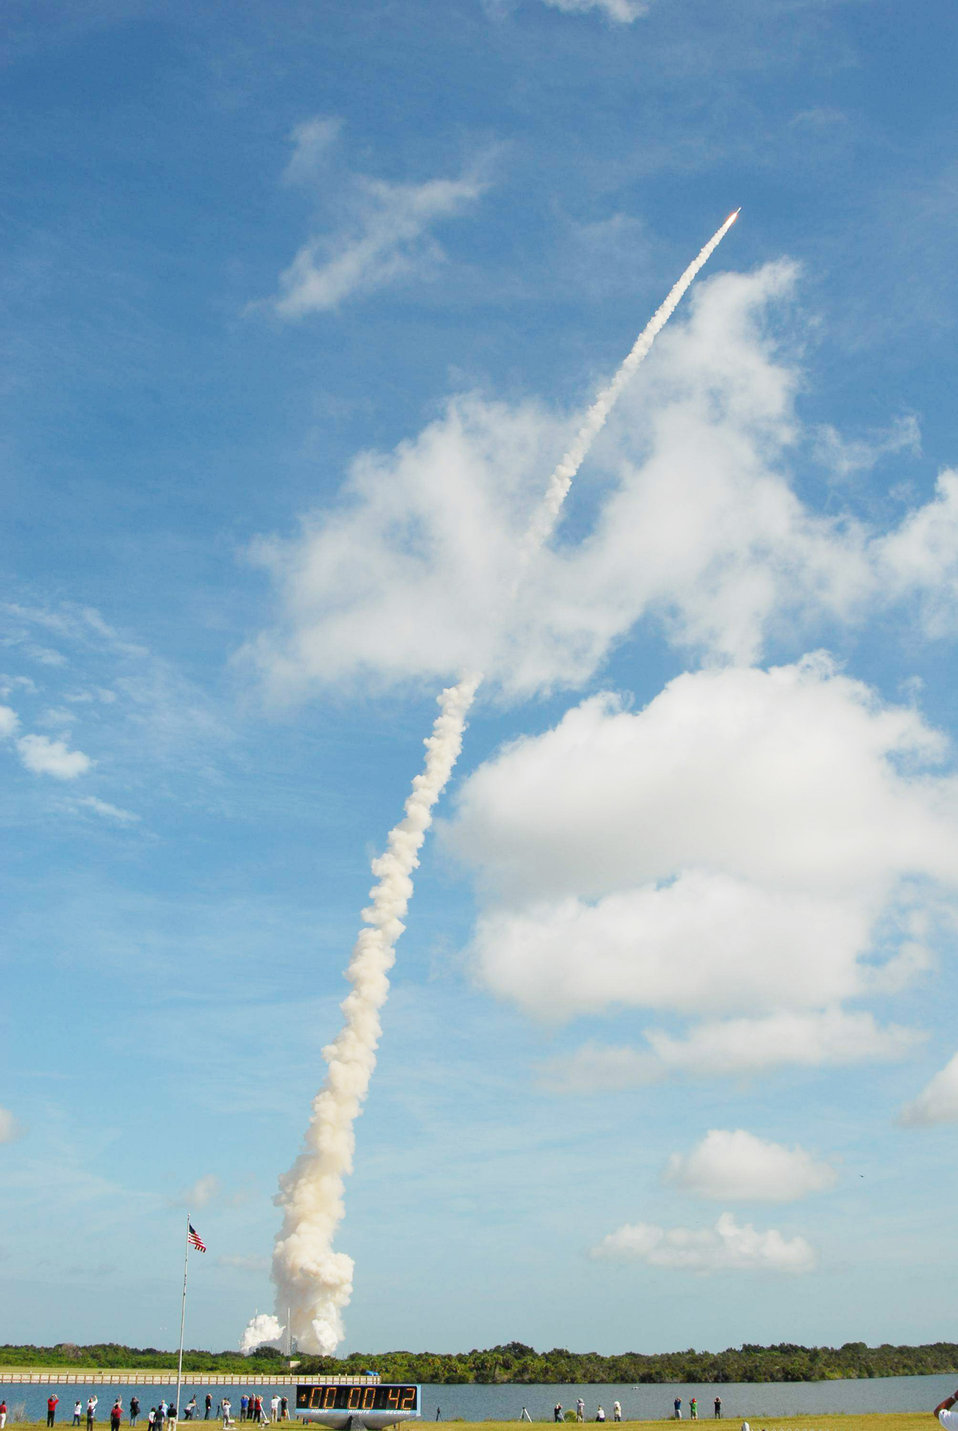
Ares I-X test rocket launched

With more than 12 times the thrust produced by a Boeing 747 jet aircraft, the Constellation Program's Ares I-X test rocket roars off Launch Complex 39B at NASA's Kennedy Space Center in Florida Oct. 28, 2009. The rocket produces 2.96 million pounds of thrust at liftoff and goes supersonic in 39 seconds.